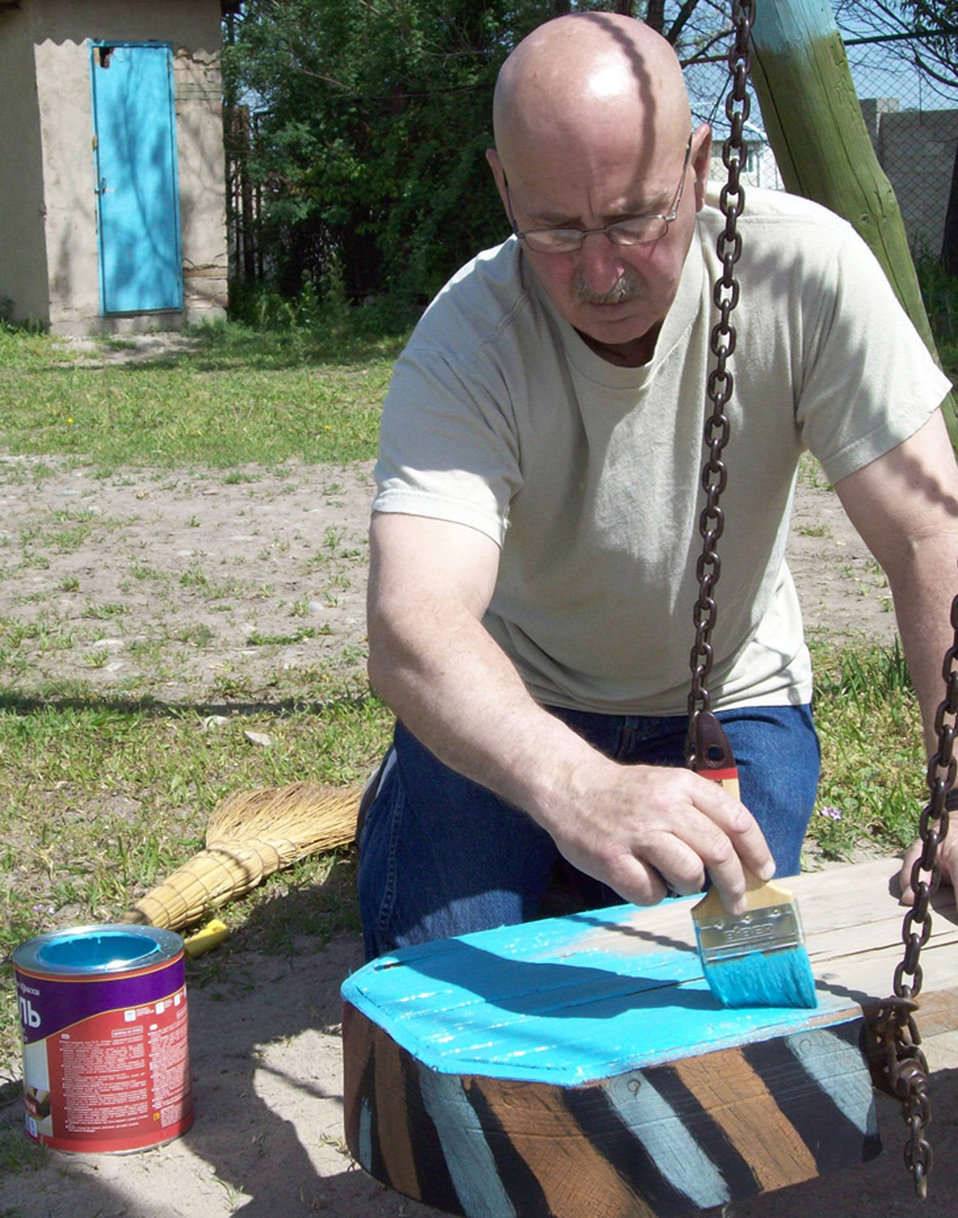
Airmen take heed for those in need

Master Sgt. Bob Atchley paints a wooden swing at Umut-Nadjeshda Children's Rehabilitation Center in Bishkek, Kyrgyzstan, May 9. Sergeant Atchley and a group of Airmen from nearby Manas Air Base visited the center in their off-duty time to do various improvements and play with the children. He is the noncommissioned officer in charge of intelligence and investigations for the 376th Expeditionary Security Forces Squadron and is an Air National Guardsman deployed from the 144th SFS in Fresno, Calif. Sergeant Atchley's hometown is Porterville, Calif.